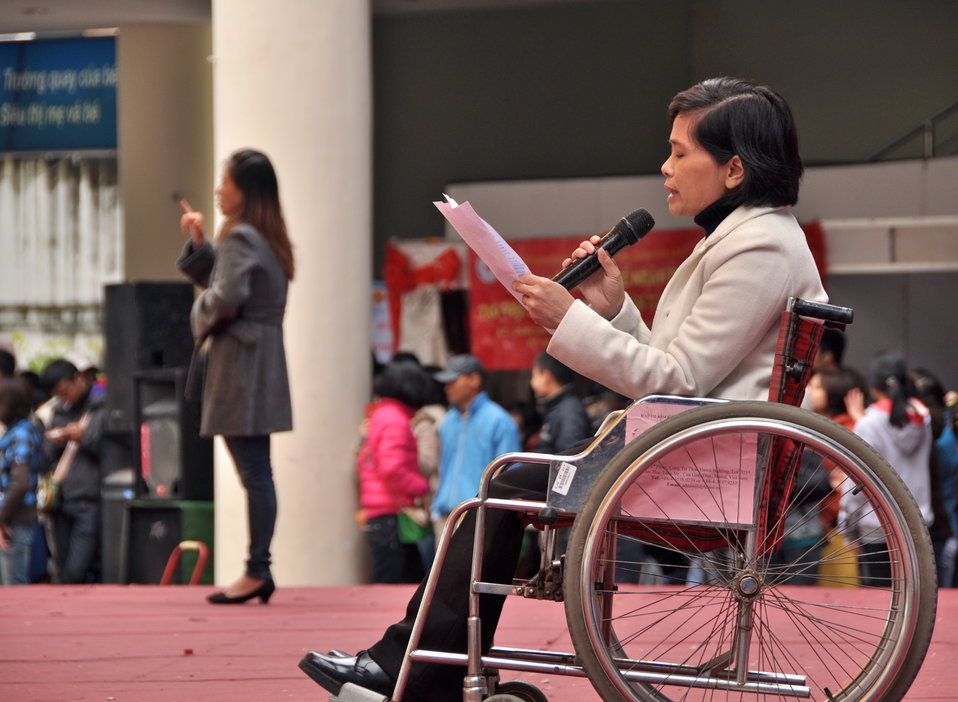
USAID joins celebration of International Day of Persons with Disabilities in Hanoi, Vietnam

December 2, 2012